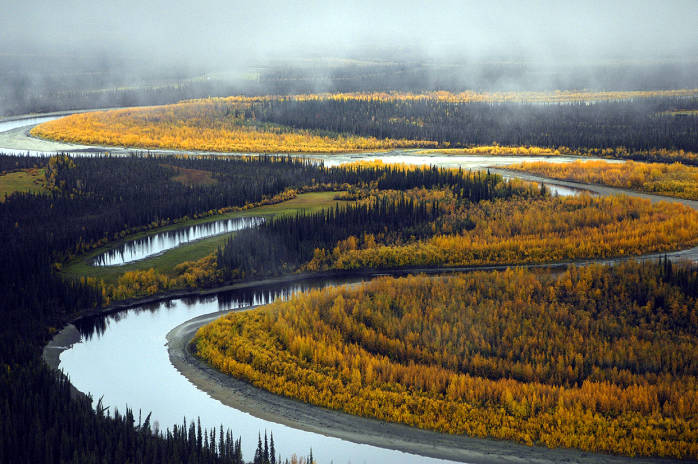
South Fork of Koyukuk River